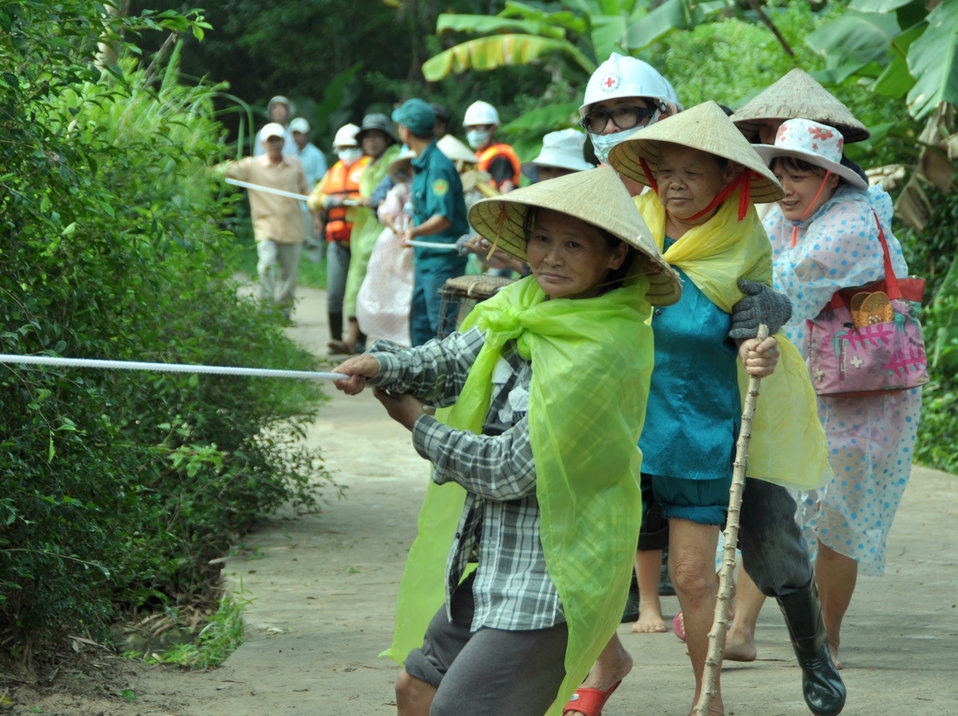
USAID, Red Cross Support Disaster Response Drill in Duy Hoa Commune, Quang Nam Province

Duy Hoa Commune, Quang Nam Province
December 5, 2012